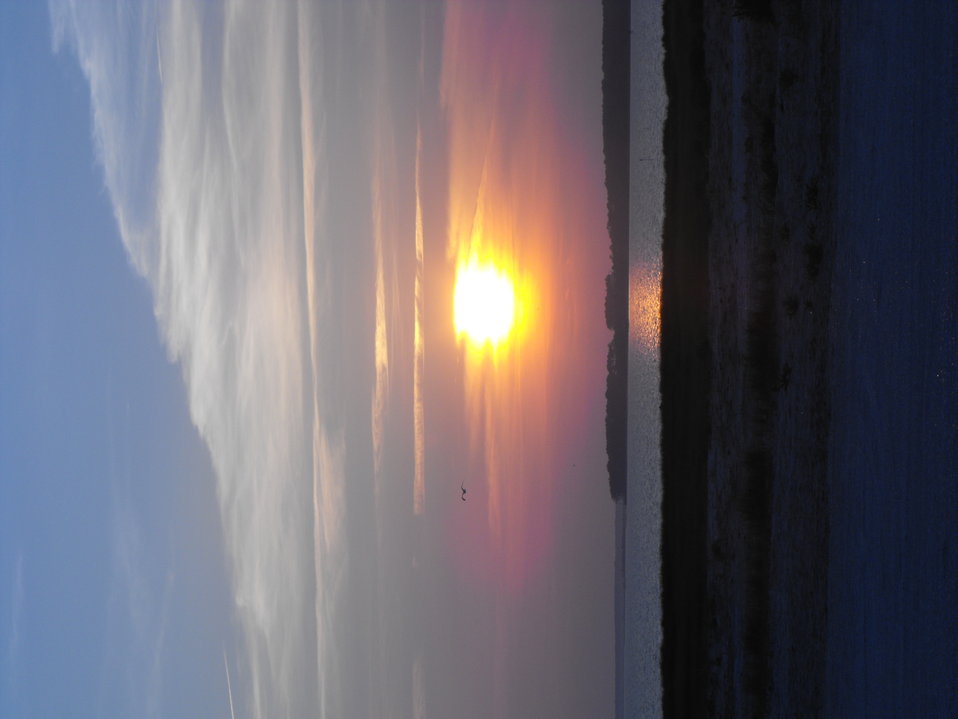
Sunset over Tom's Cove at Chincoteague National Wildlife Refuge / Assateague Island National Seashore.